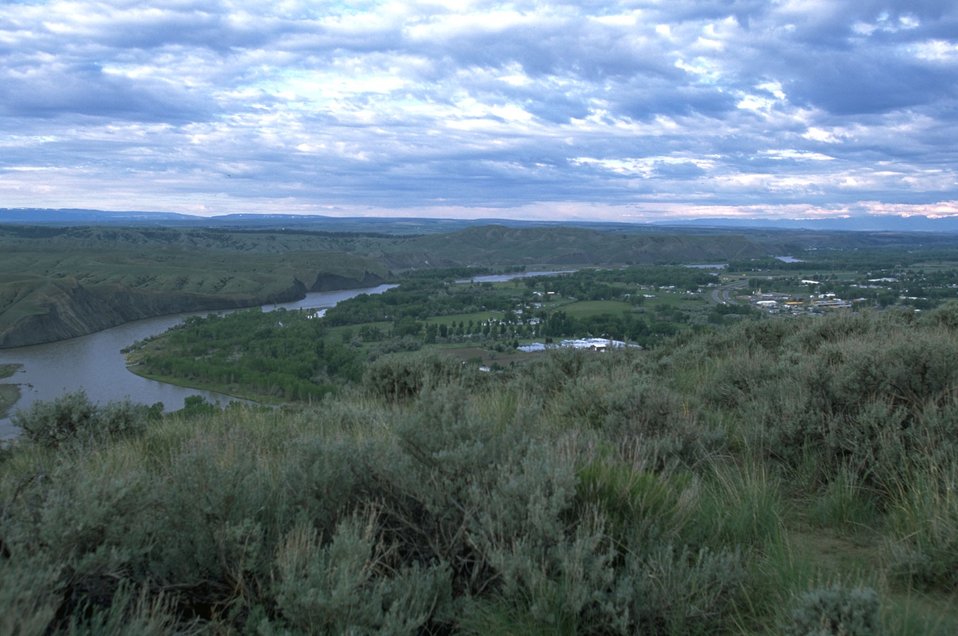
The Yellowstone River from the south end of the rimrocks